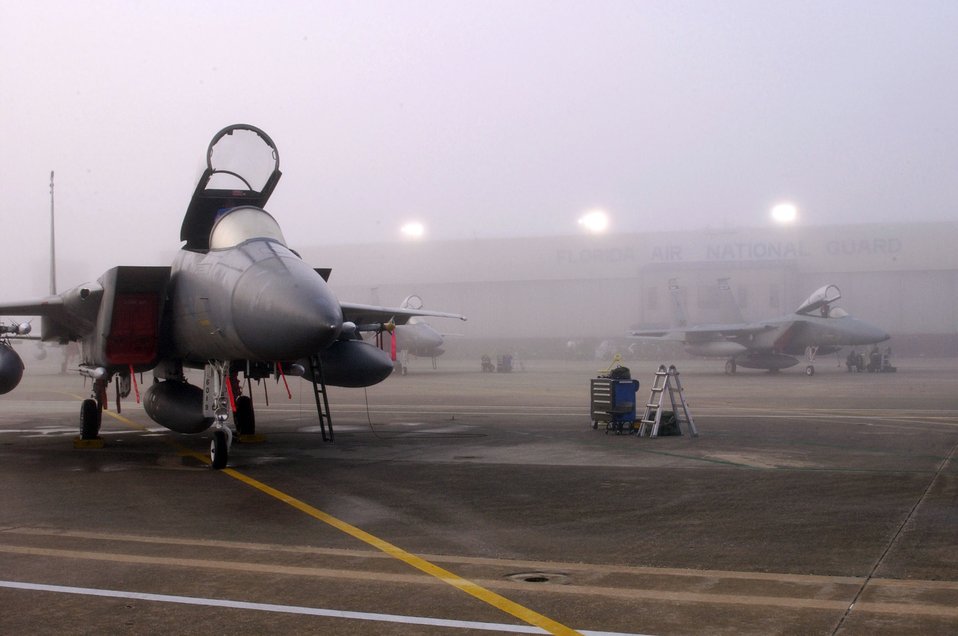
Flight preparation

Airmen at Tyndall Air Force Base and their Air National Guard counterparts are looking at ways to speed up the process for transferring F-15 Eagles, like these, from the active force to the Guard.